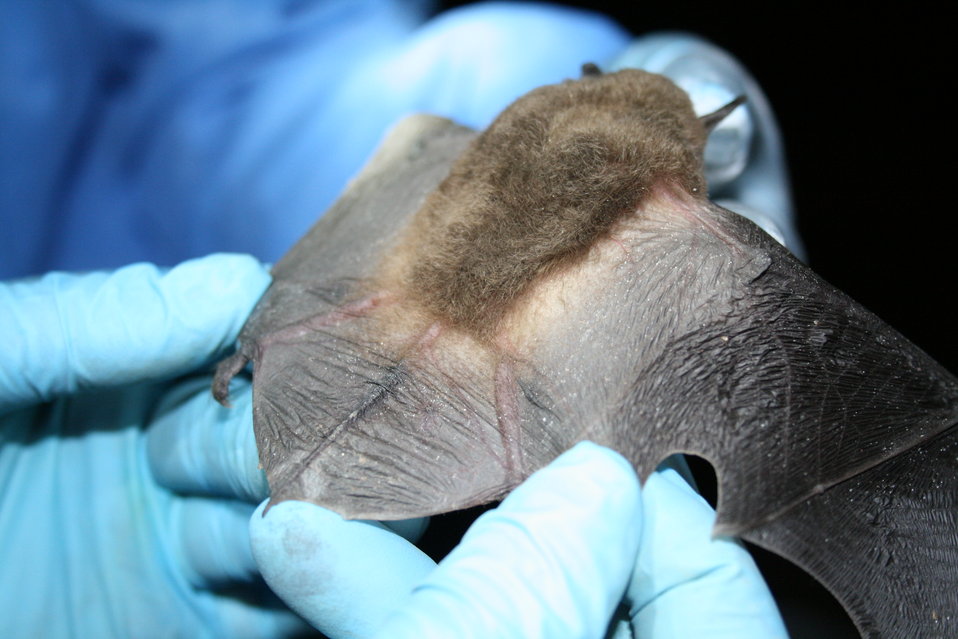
MDC biologist inspects bat